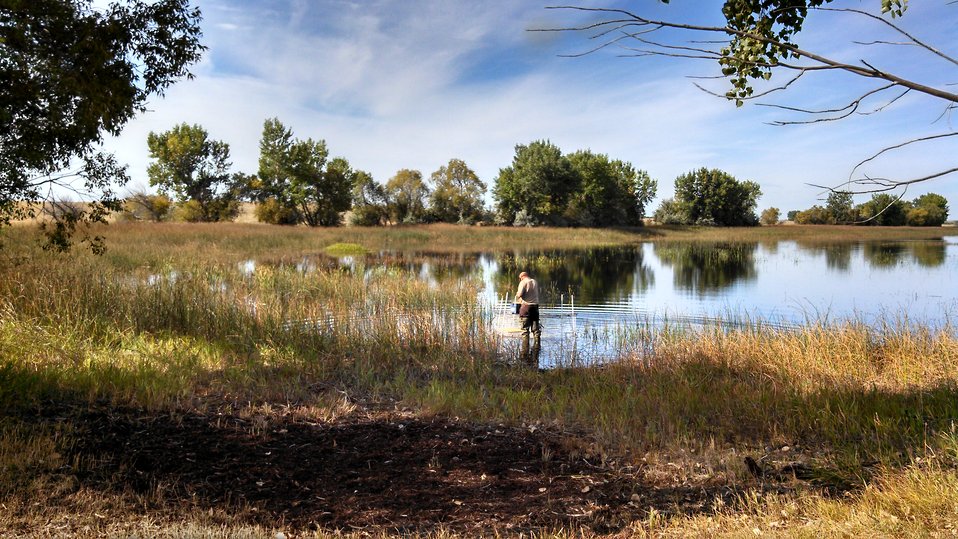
Lakeside Extension - Bowdoin NWR

Tranquil scene of wetland and refuge staff on the Lakeside Extension wetland unit on Bowdoin NWR